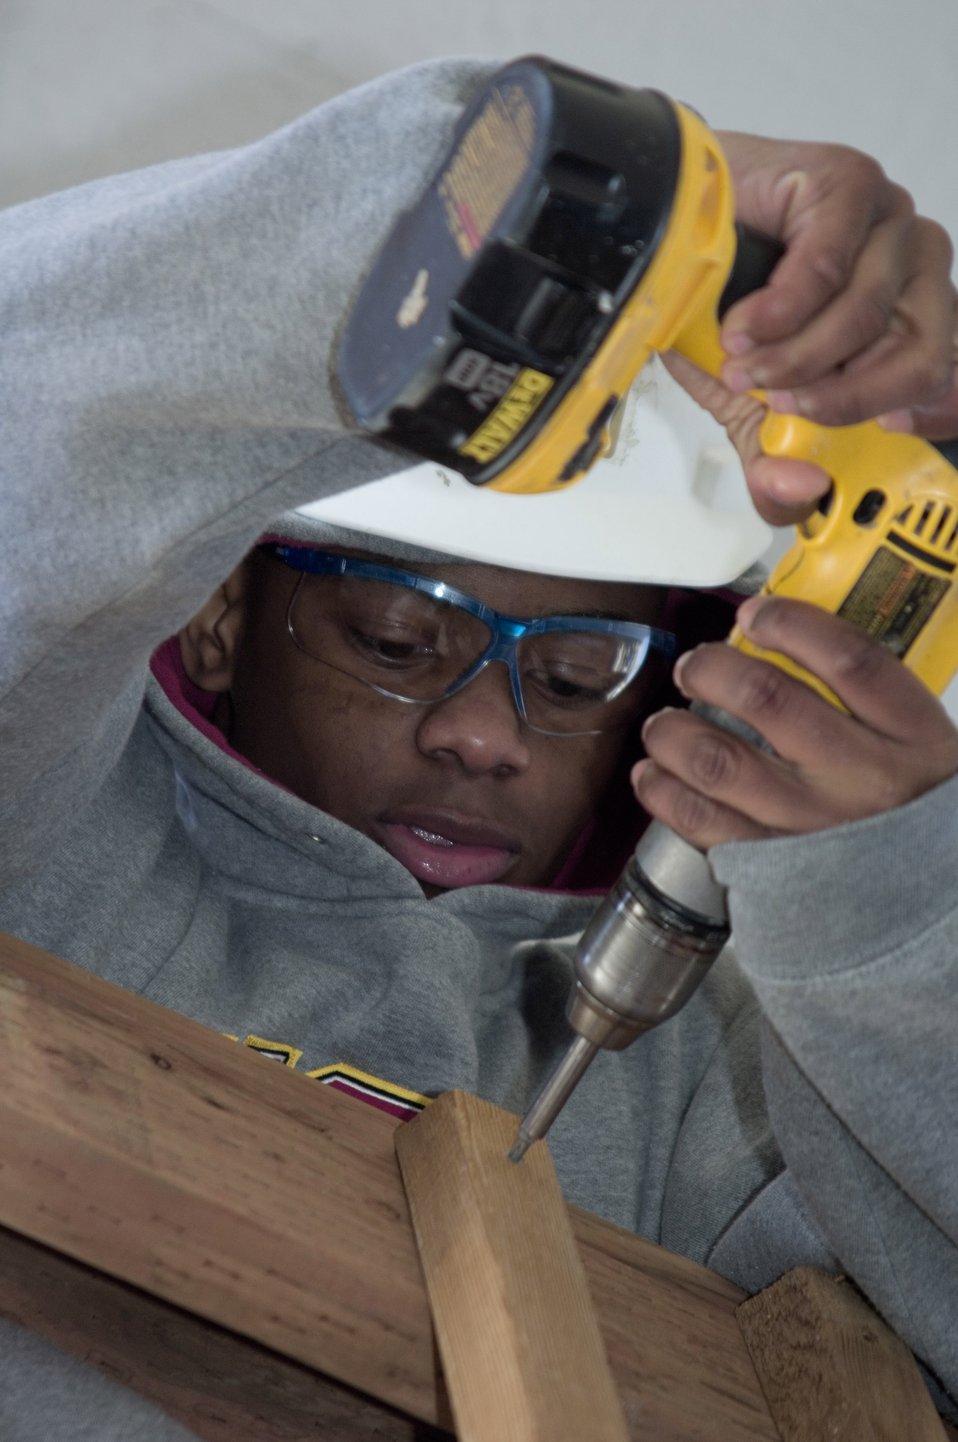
Elmendorf Airmen lend a hand

Airman 1st Class Joseph Amos drills a screw into a stair rail at a Habitat for Humanity work site May 3 at Anchorage, Alaska. Airman Amos is a former student of the First Term Airman Center and a member of the 3rd Logistics Readiness Squadron at Elmendorf Air Force Base, Alaska.